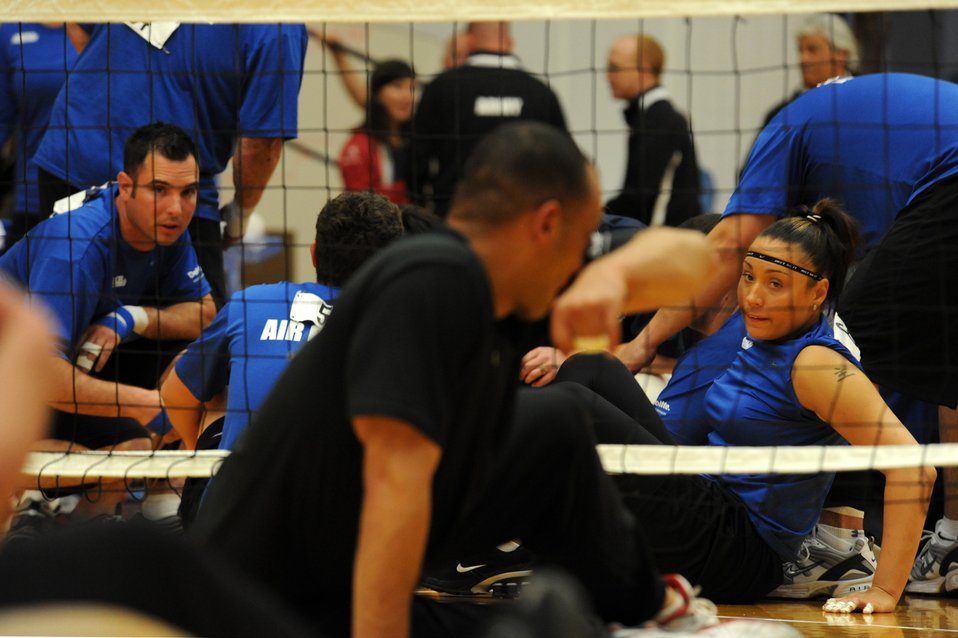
AF Volleyball wins Bronze at Warrior Games

Air Force Warrior Games athletes, Staff Sgt. Christopher D'Angelo and Jennifer Stone, eye their opponents during the Warrior Games sitting volleyball match against Army at the U.S. Olympic Training Center in Colorado Springs, Colo., May 13, 2010.